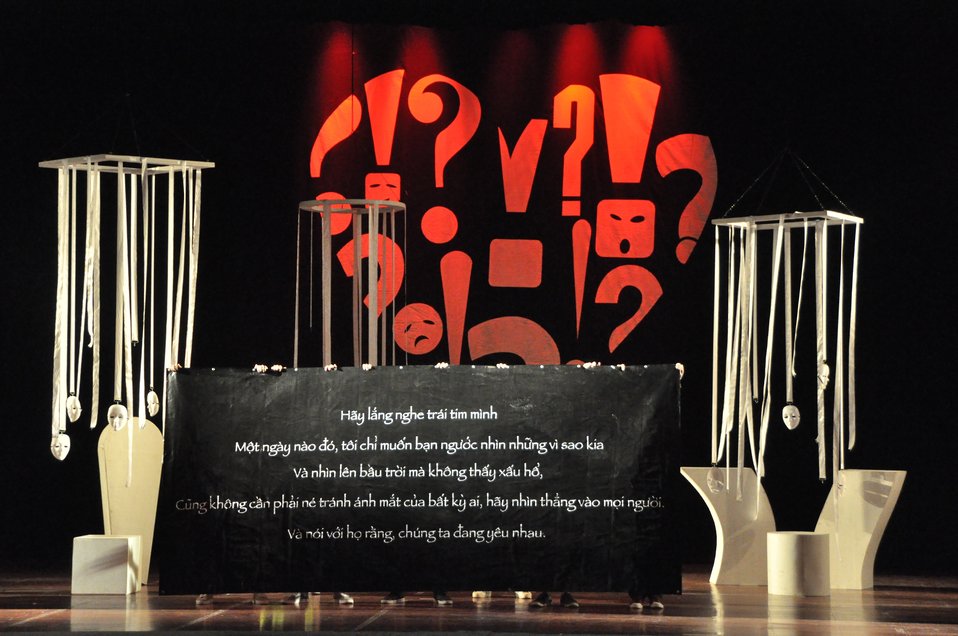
PEPFAR Musical Questions and Exclamations

Hanoi, May 17, 2013